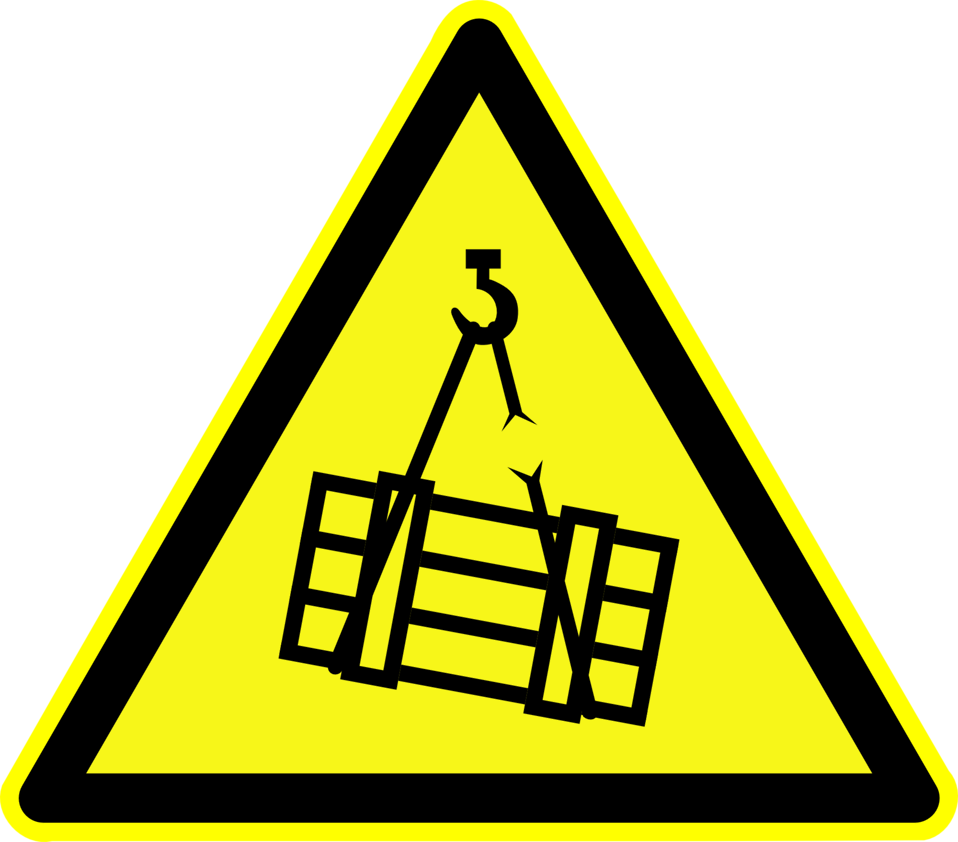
Deutsch: Warnung vor schwebender Last, Warnzeichen D-W006 nach DIN 4844-2 Overhead load warning